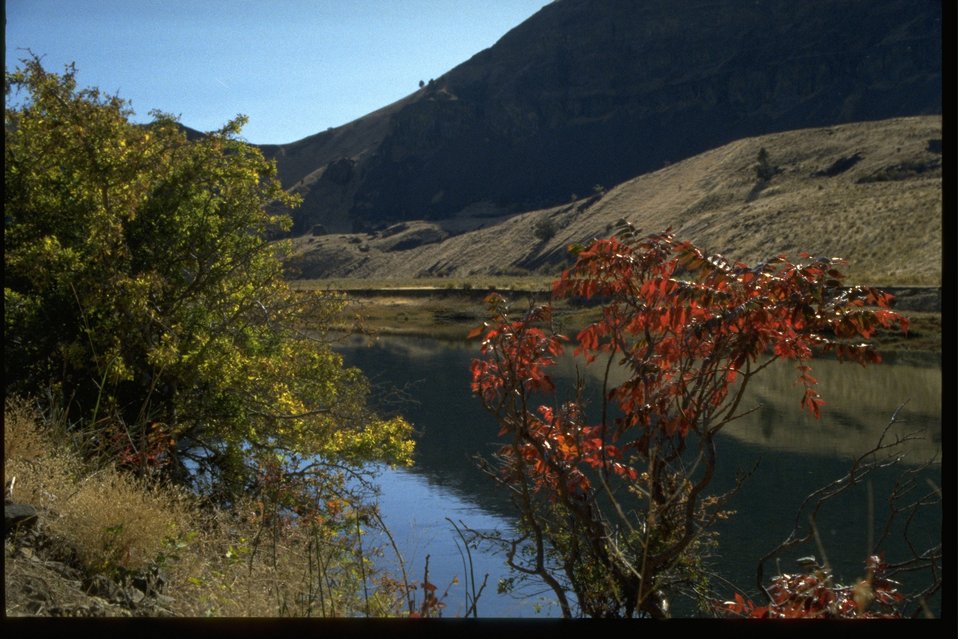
Sumac and riparian vegetation along the John Day River.